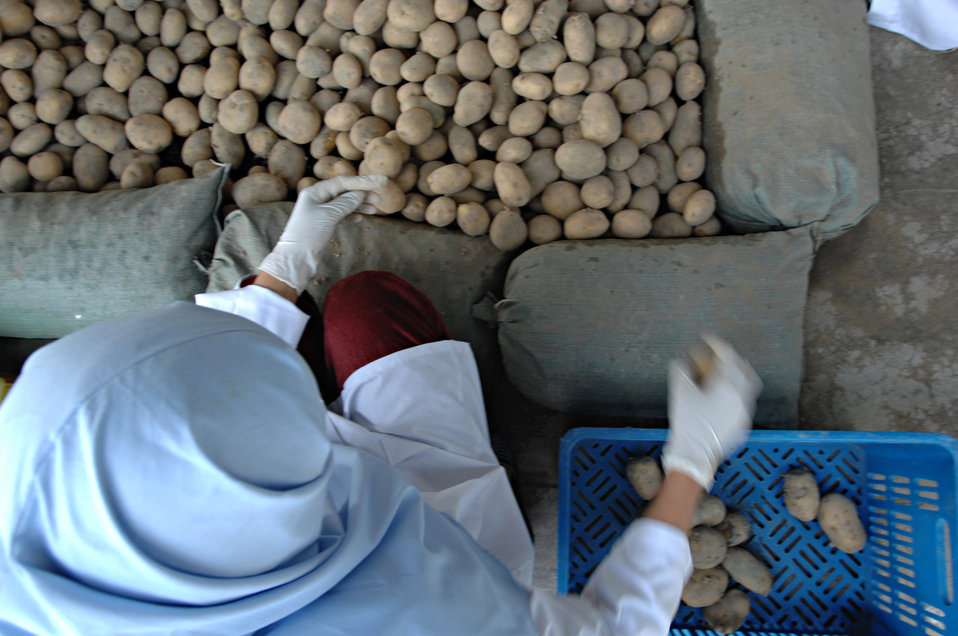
110209sv Shah167

Women sort and grade potatoes at the Surkh Rod vegetable packing facility in Nangarhar province on Wednesday, February 9, 2011. (S.K. Vemmer/Department of State)